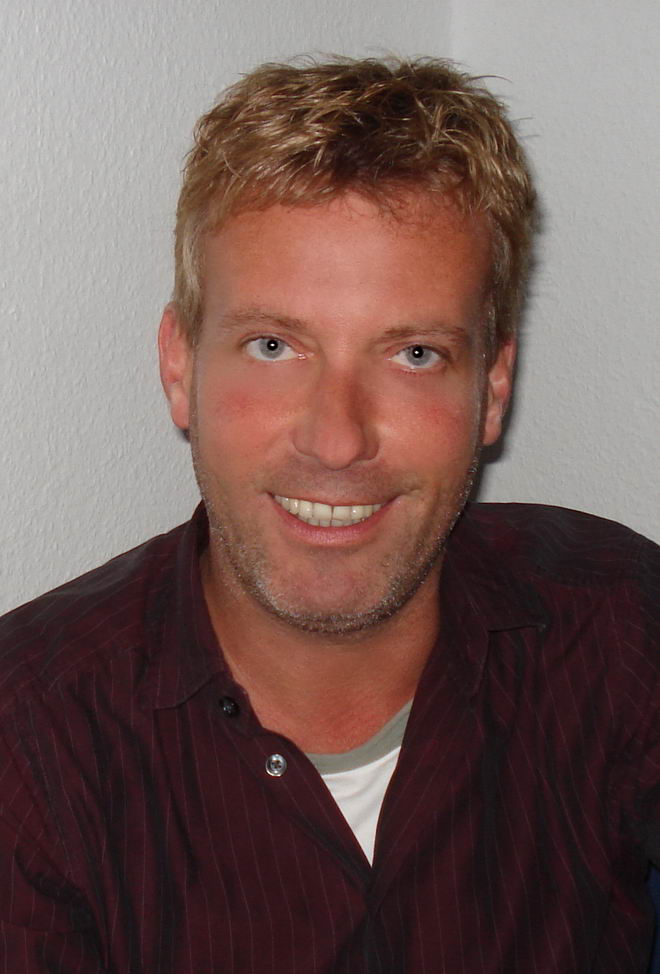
Deutsch: Hagen Henning - dt. Schauspieler in Berlin-Friedrichshain